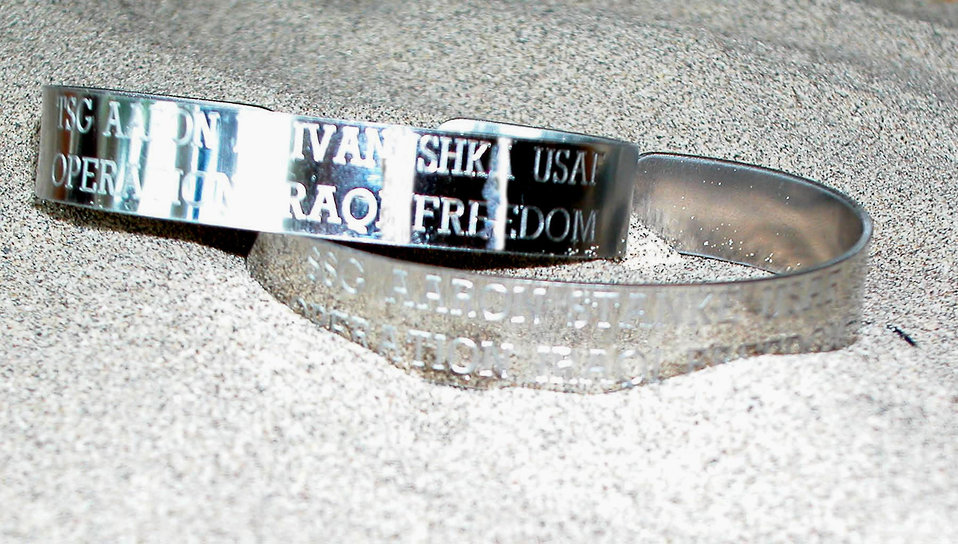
Cold steel warms Airmen's hearts

MCCHORD AIR FORCE BASE, Wash. -- Bracelets like these are made in honor of deployed maintainers and given to a fellow squadron Airman and a family member. The bracelets serve as a reminder for those here to keep in daily contact with their deployed Airman.